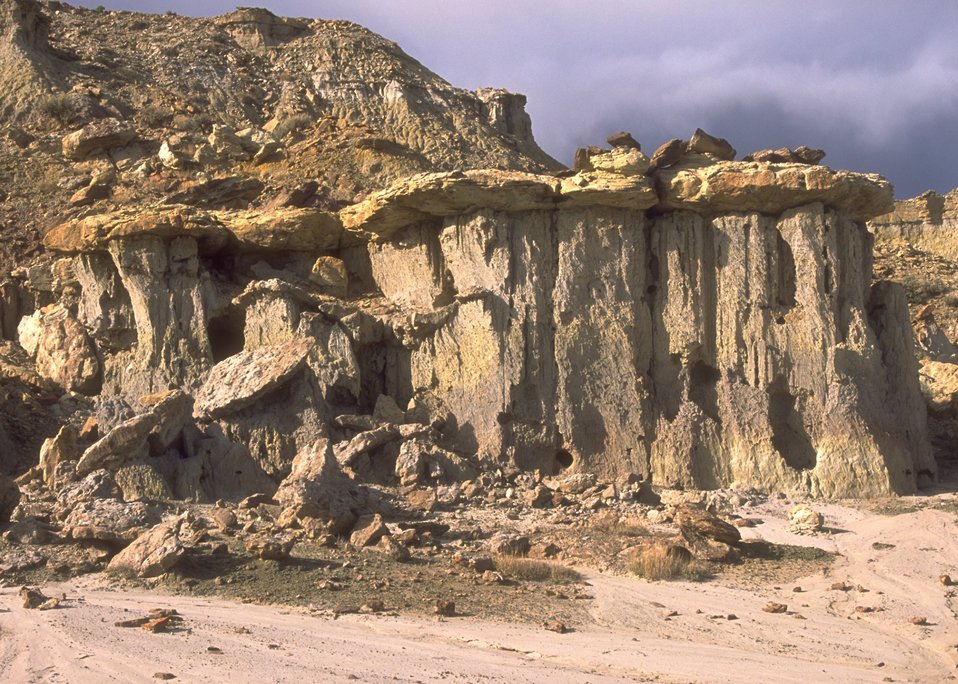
Gooseberry Interpretive Area, Worland Field Office.